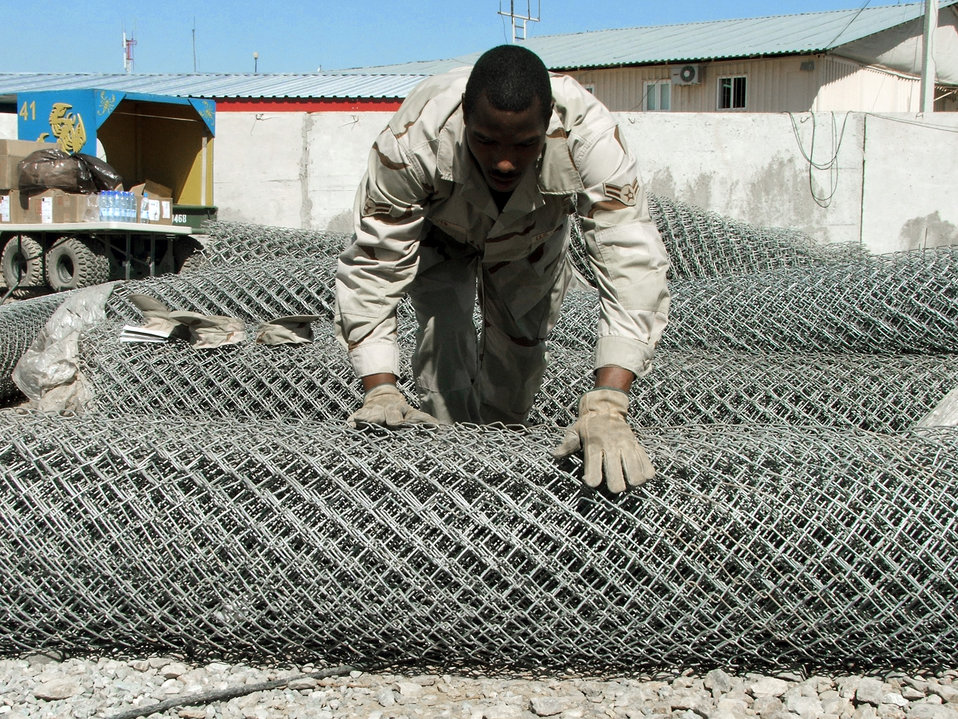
Civil engineers improving Uzbek base

KARSHI-KHANABAD AIR BASE, Uzbekistan -- Airman 1st Class Jeffrey Watts rolls out some fencing material while working on a construction project here. He is assigned to the 416th Expeditionary Mission Support Squadron's civil engineer flight and is deployed from Vandenberg Air Force Base, Calif.